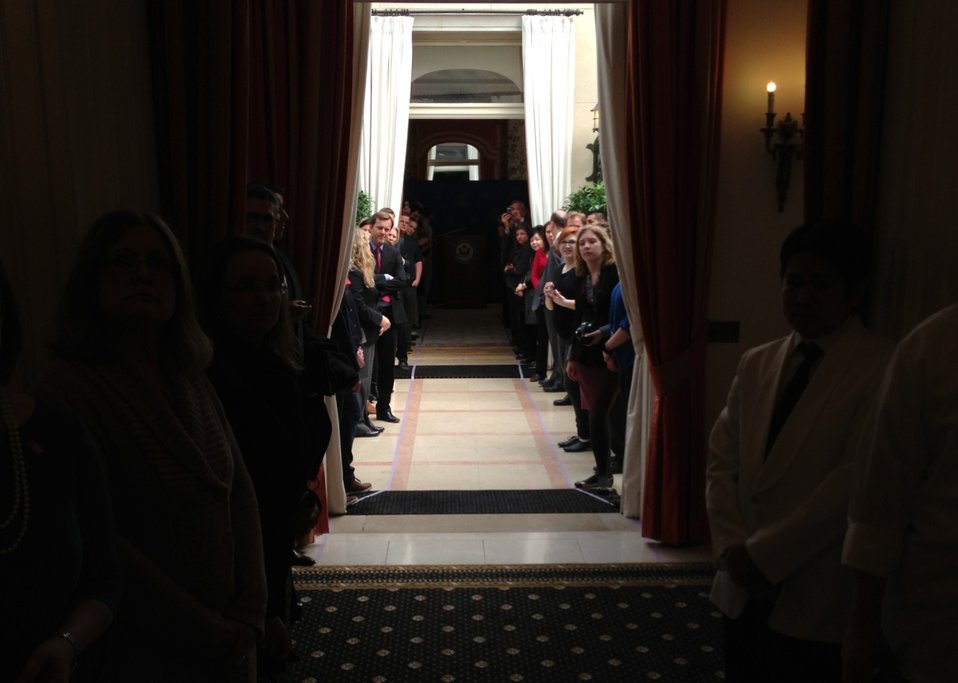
The Staff and Families of Tri-Mission Brussels Await Secretary Kerry

The staff and familes of Tri-Mission Brussels await U.S. Secretary of State John Kerry's entrance at the U.S. ambassador's residence in Brussels, Belgium, April 22, 2013.